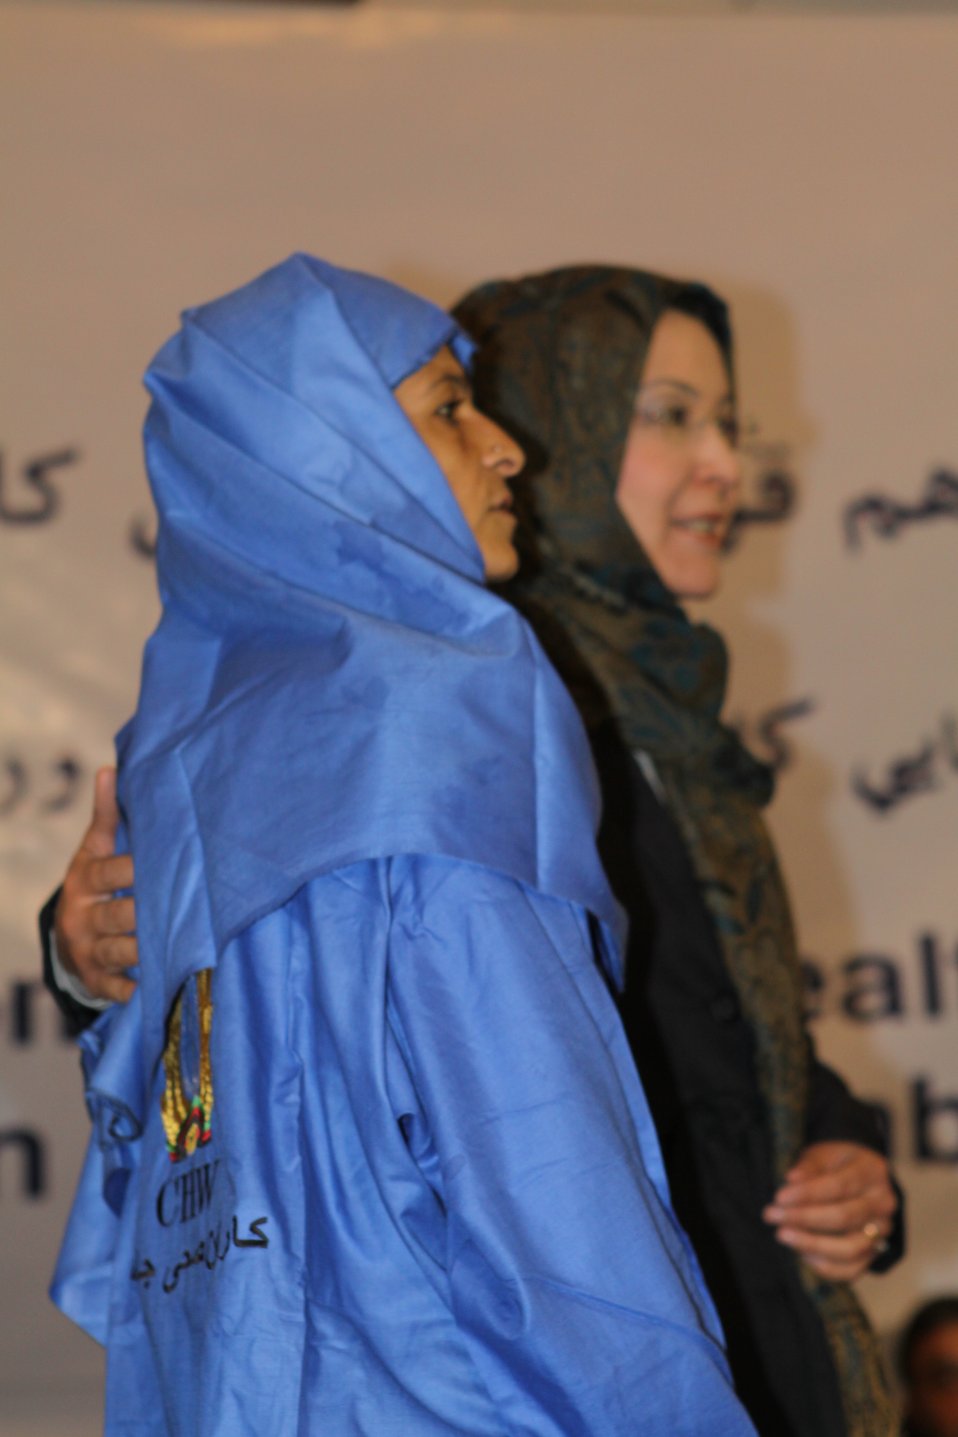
Community Health Workers Celebrated

Kabul, Afghanistan | December 5, 2010 — In support of the United Nations designated International Volunteer Day for Economic and Social Development, Afghanistan’s Ministry of Public Health celebrated its annual Community Health Worker Day today. Acting Minister of Public Health Dr. Suraya Dalil, USAID Senior Deputy Mission Director Robert Hellyer, other government officials, and international donors joined in recognizing the critical contribution of community health workers in Afghanistan and encouraging them to continue their voluntary support to their communities.
The event praised the contributions of the more than 22,000 volunteers throughout the country who deliver community level health-education, counseling, and services out of village health posts located in private homes. The Ministry of Public Health envisioned that community-based healthcare programs will actively encourage communities and families to adopt healthy lifestyles and behaviors, and provide families access to high quality and socially acceptable preventative medicine and life-saving services.
“We have 22,000 community health workers in Afghanistan that are able to implement the basic and standard medicines. They all have been trained through a job description,” said Minister Dalil. Addressing the health workers, she added, “I am proud and feel powerful that I have people like you.”
USAID-funded health projects collaborate closely with the Ministry of Public Health to improve the health and nutritional status of Afghans, provide quality primary healthcare, and promote healthy behaviors at the community and household-levels. USAID supported the training of more than 9,000 of the volunteer community health workers currently working in Afghanistan.
“On behalf of the American people, I congratulate the Community Health Workers for their diligence to gain the skills and knowledge necessary to serve their communities in this important role,” said USAID Senior Deputy Mission Director Hellyer. “USAID strongly supports community based health care and believes that quality community-based health services are essential to reaching Afghanistan’s Millennium Development Goals.”
To support the Basic Package of Health Services, USAID assisted in developing the community health worker training manual, helped train community health worker supervisors and master-trainers, facilitated in-service training, and produced and developed reporting tools, job aids, and education materials.